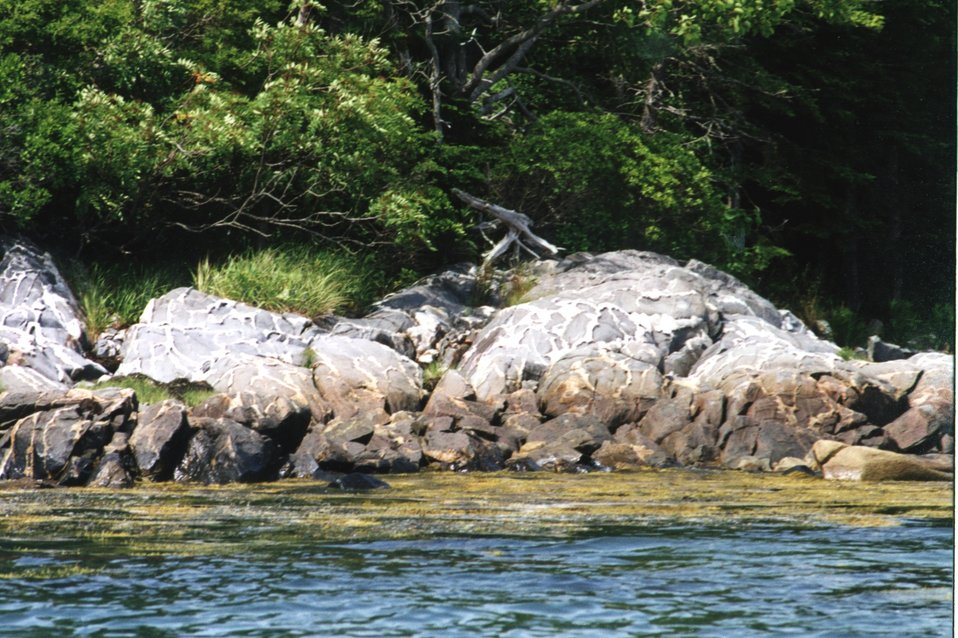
Pillow basalts indicating location of former oceanic spreading center.